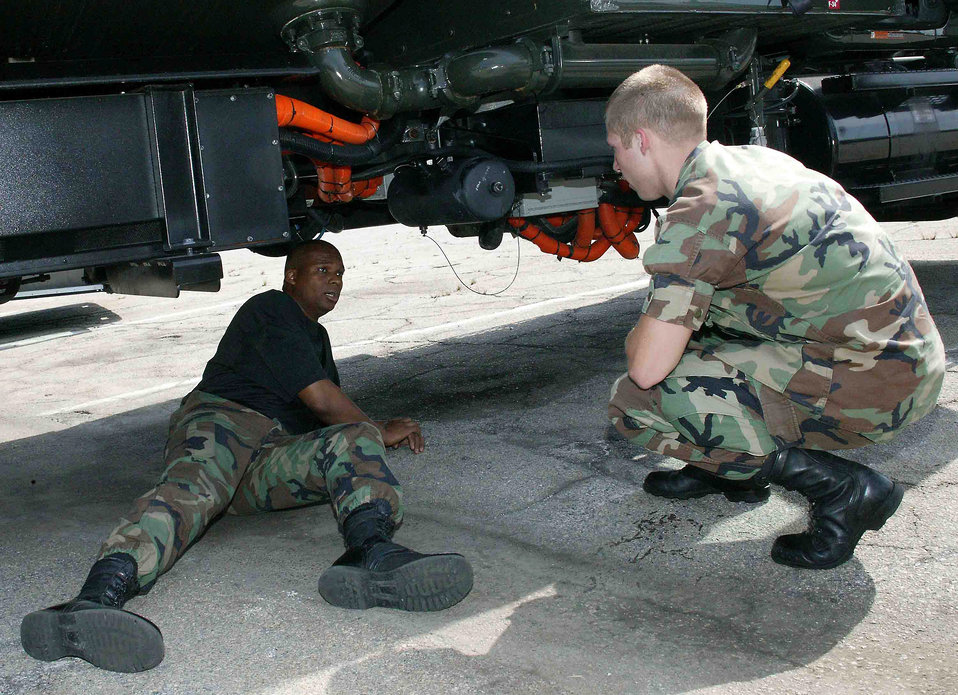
Shaw to begin one-year hybrid refueler test

Tech. Sgt. Spellmon Quinn (left) and 2nd Lt. Zachary Buckallew talk about the performance of the electric motor on an R-11 hybrid refueler April 25 at Shaw Air Force Base, S.C. The environmentally-friendly, 72,000-pound hybrid, the only one of its kind in the Air Force, is undergoing a one-year test at Shaw to see how much money it saves on fuel, maintenance and other cost measurements. Sergeant Quinn is a vehicle technician and Lieutenant Buckallew is a maintenance flight commander. Both are assigned to with the 20th Logistics Readiness Squadron.